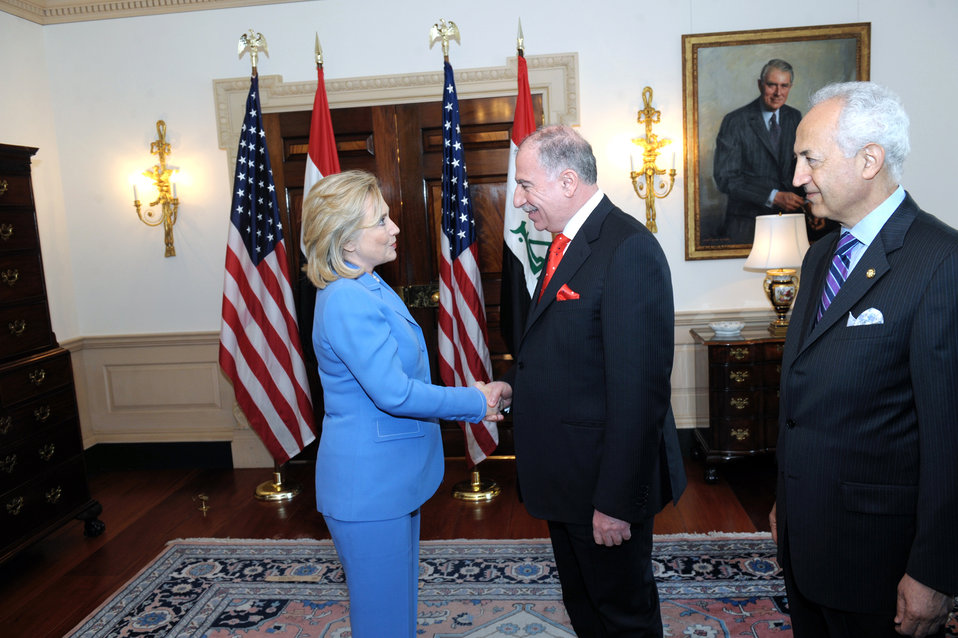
Secretary Clinton Shakes Hands With Iraqi Parliament Osama al-Nujaifi

U.S. Secretary of State Hillary Rodham Clinton shakes hands with Osama al-Nujaifi, Speaker of the Iraqi Parliament, at the U.S. Department of State in Washington, D.C., on June 24, 2011.